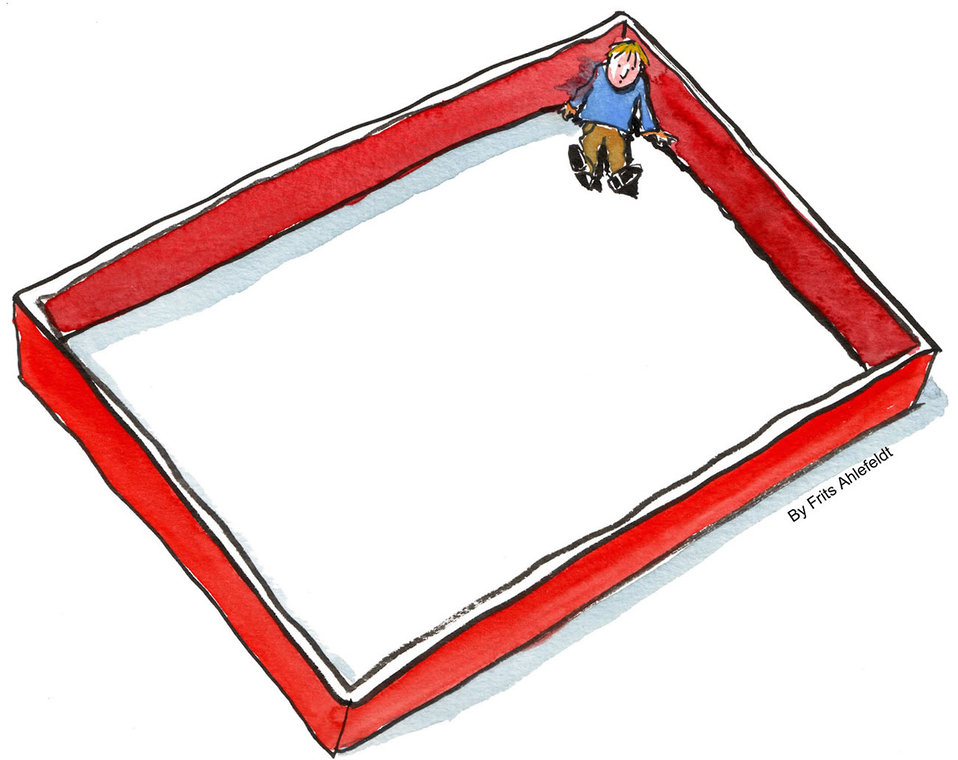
Time to think out of the box...

Guy sitting in the corner of a red box.